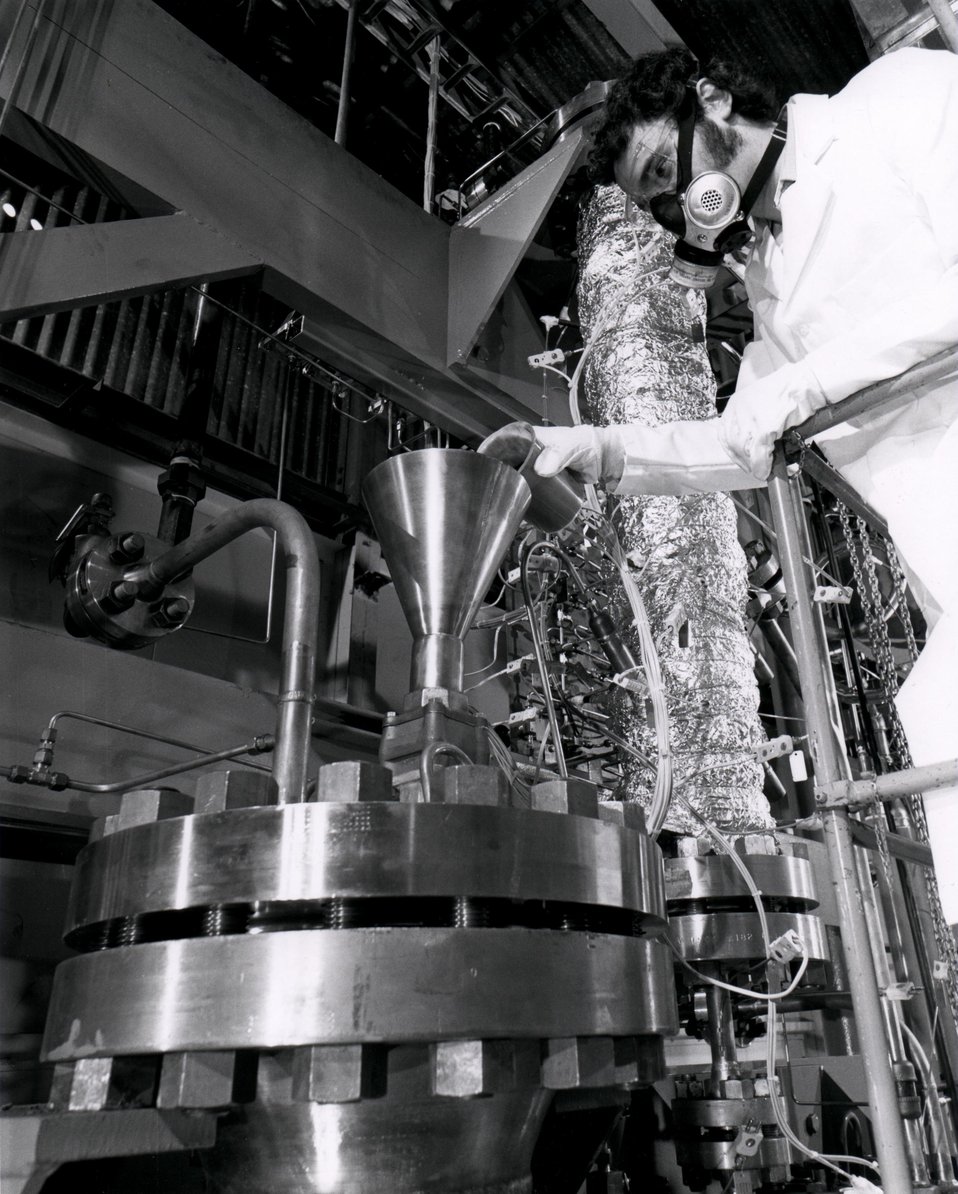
The Energy Research and Development Administration's Oak Ridge National laboratory is involved in both process development and engineering evaluation of several coal-conversion processes for producing synthetic crude oil from coal. Circa 1976.